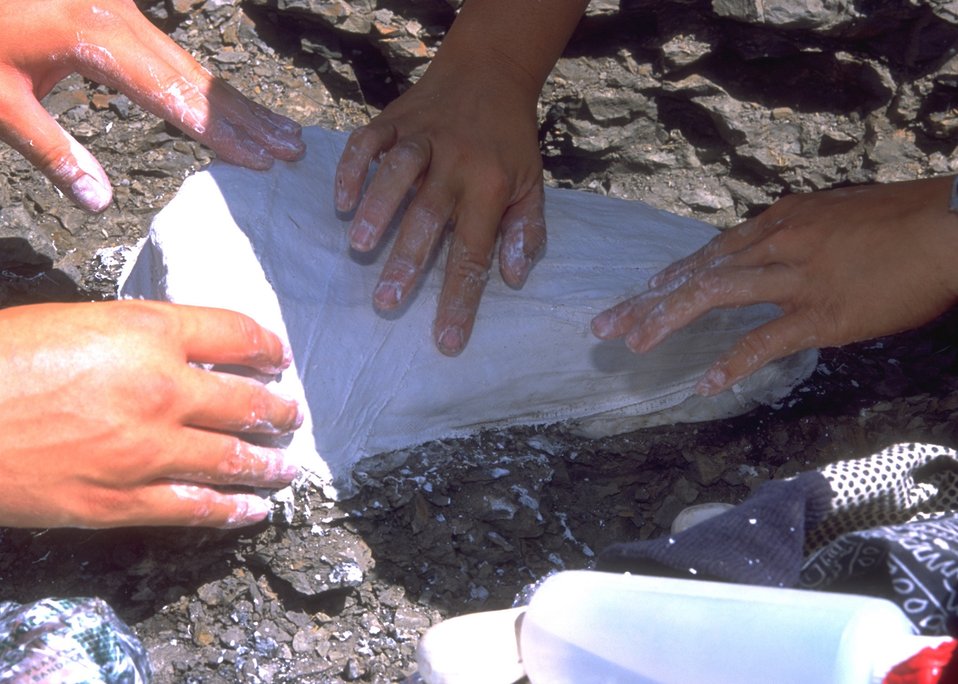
Paleontologist preparing a cast for a dinosaur bone, Lance Creek Fossil Area, Newcastle Field Office.